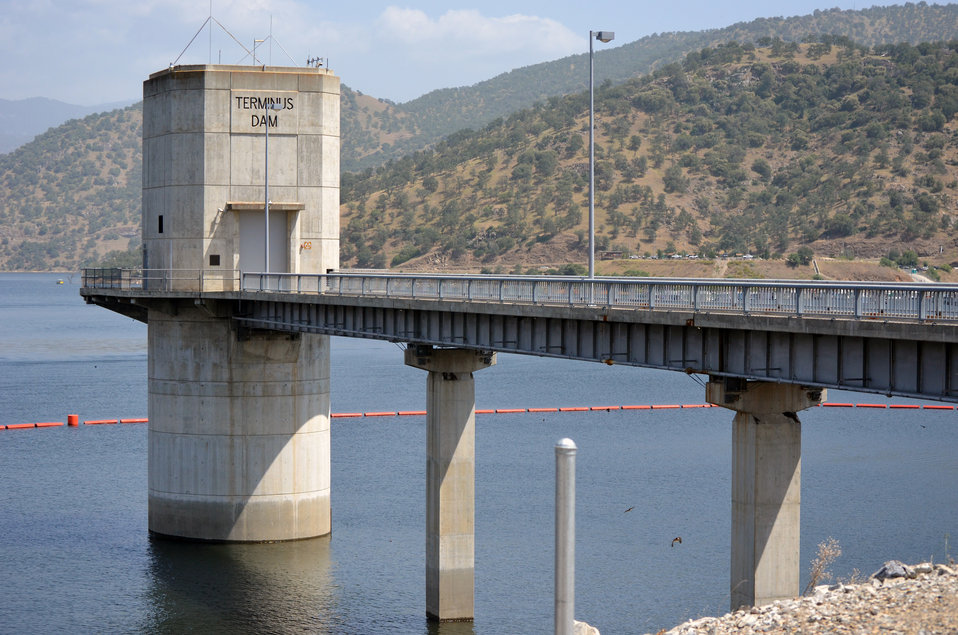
Lake Kaweah celebrates 50 years!

The control tower at Terminus Dam, completed in 1962. The U.S. Army Corps of Engineers Sacramento District celebrated the 50th anniversary of Lake Kaweah and Terminus Dam near Visalia, Calif., May 18, 2012. Since 1962, the dam has provided reduced risk of flooding and millions of dollars in agricultural, recreation and natural resources benefits.